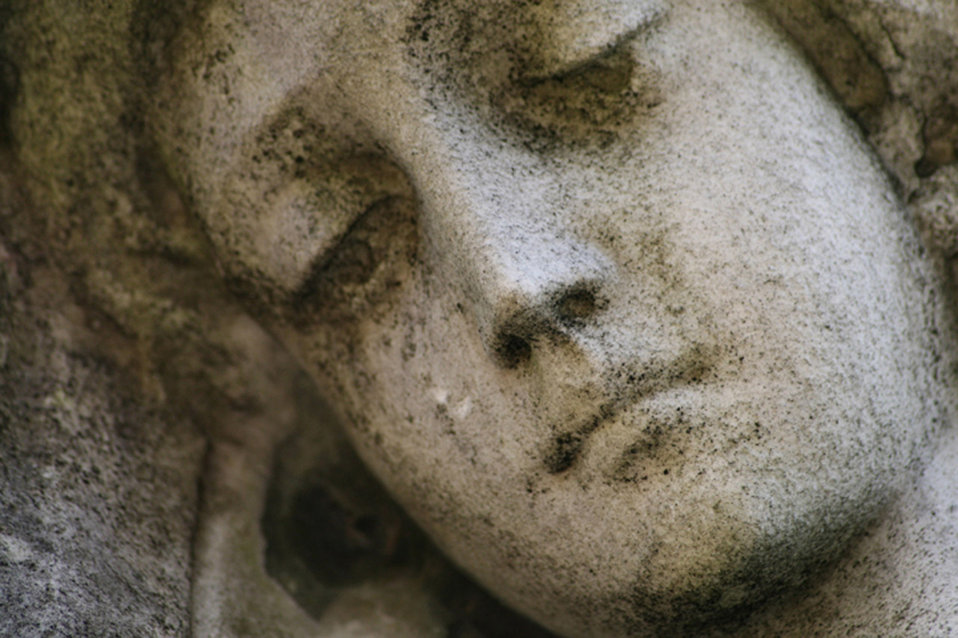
Angel statue in a cemetery.